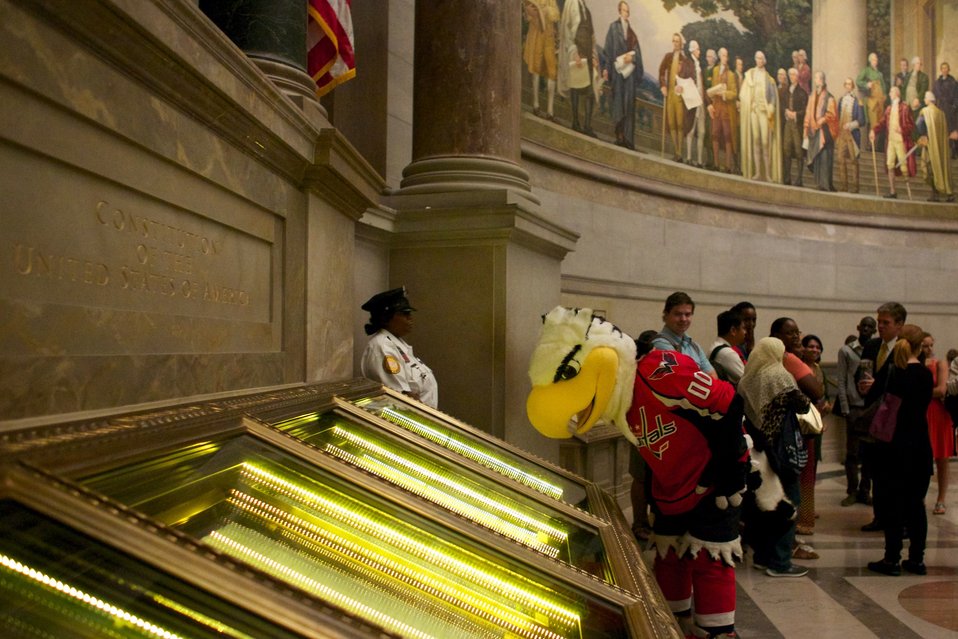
Washington Capitals mascot Slapshot visits the National Archives